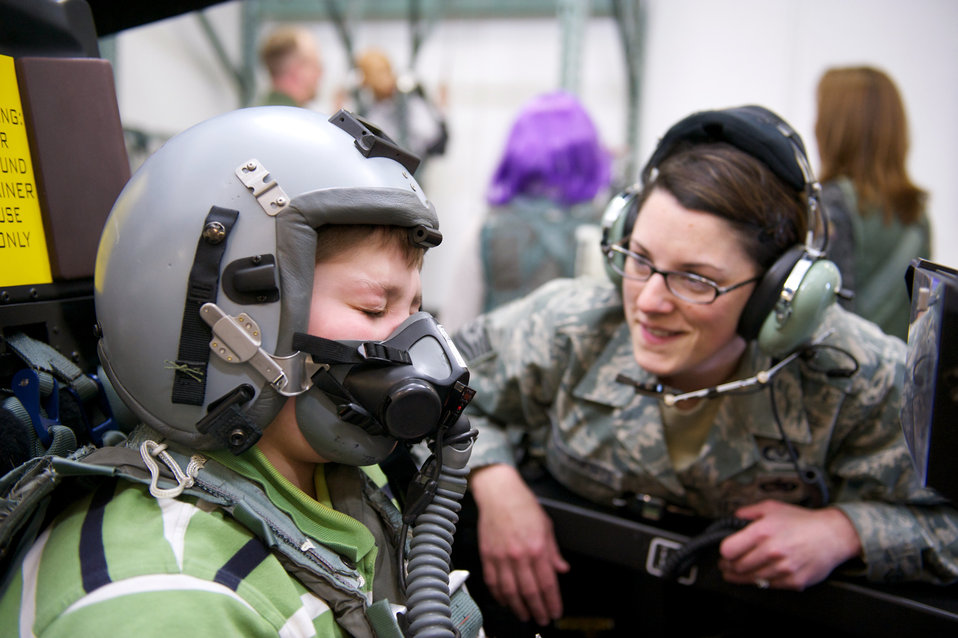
PB

Keegan Hall, 12, breathes through an oxygen mask, Oct. 29, 2010, in the F-22 Raptor egress procedure trainer at Joint Base Elmendorf-Richardson with the help of Tech. Sgt. Chelsea De La Fuente. Sergeant DeLa Fuente is with the Aircrew Flight Equipment Flight, 3rd Operations Support Squadron.